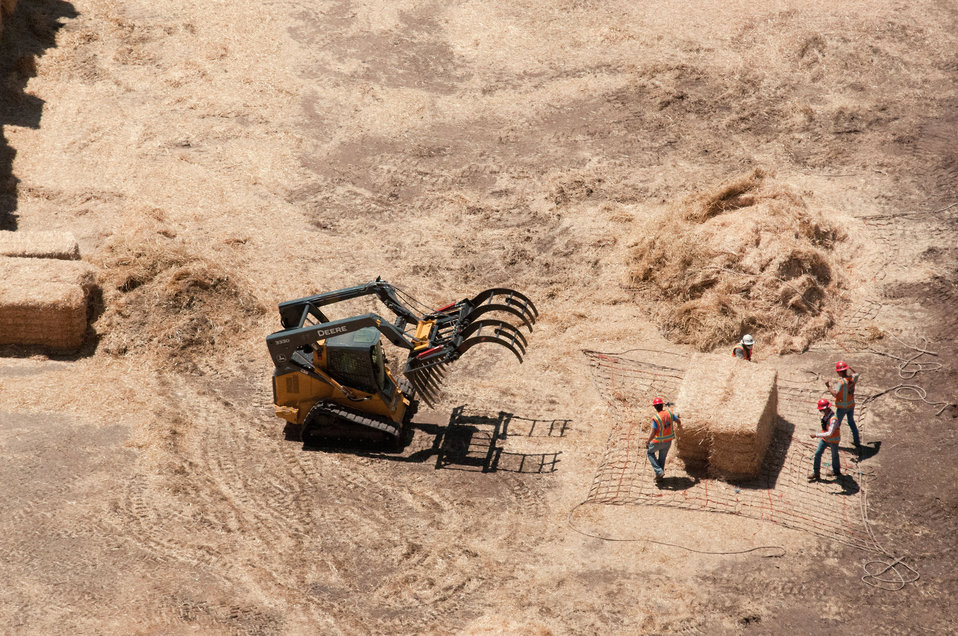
A frontloader with a hydraulic fork grapple attachment, center, makes easy work positioning straw bales on cargo nets, right, loosening the straw for greater aerial dispersment, above right, and removing straw, behind loader on left, to adjusting the weight of the load for the continuing aerial application of straw to mitigate soil and ash runoff from the mountainous terrain leading to Seaman Reservoir, drinking water resource for the City of Greeley, on Friday, July 20, 2012, near Fort Collins, Colorado. 4-person load crews and heavy equipment operators unloaded 1,000 pound straw bales from tractor trailer rigs, stack them near the pickup point, then bring the bales onto cargo nets, for helicopters to lift and drop them onto barren, burned out tributary lands. Bell UH-1H (2-blade rotor) and A-Star Model B (3-blade rotor) aircraft launched from a landing zone at the foot of the reservoir spillway. The 100-150-foot lines holds and releases loads of certified straw weighing 1,400 – 2,000 pounds. Forest service lands received straw, while private and other lands receive a seed mix and straw to promote ground cover plant growth on ash-covered lands. In total, 1,800 tons of straw will be applied during the 14-day operation. One quarter of the cost was paid by the City of Greeley and the U.S. Department of Agriculture funded the remainder. The Hewlett Gulch Fire was started by a camper’s alcohol stove, on May 14, at the saddle of a picturesque mountain ridge along the Hewlett Gulch Trail of Poudre Canyon, in the Roosevelt National Forest, 60 miles north of Denver. At it’s more than 400 firefighters were battling fires being pushed by 50 mph winds that helped blacken over 12-square-miles of dry ground cover, brush and trees. Many of the trees were already dead and tinder dry from beetle-kill. The water in the reservoir remains clean and clear, while downstream water flow has gone from famous Colorado clear water to nearly black flows of water heavily laden with ash, silt, and burnt debris that recent thunderstorms have already washed down from the mountainsides.